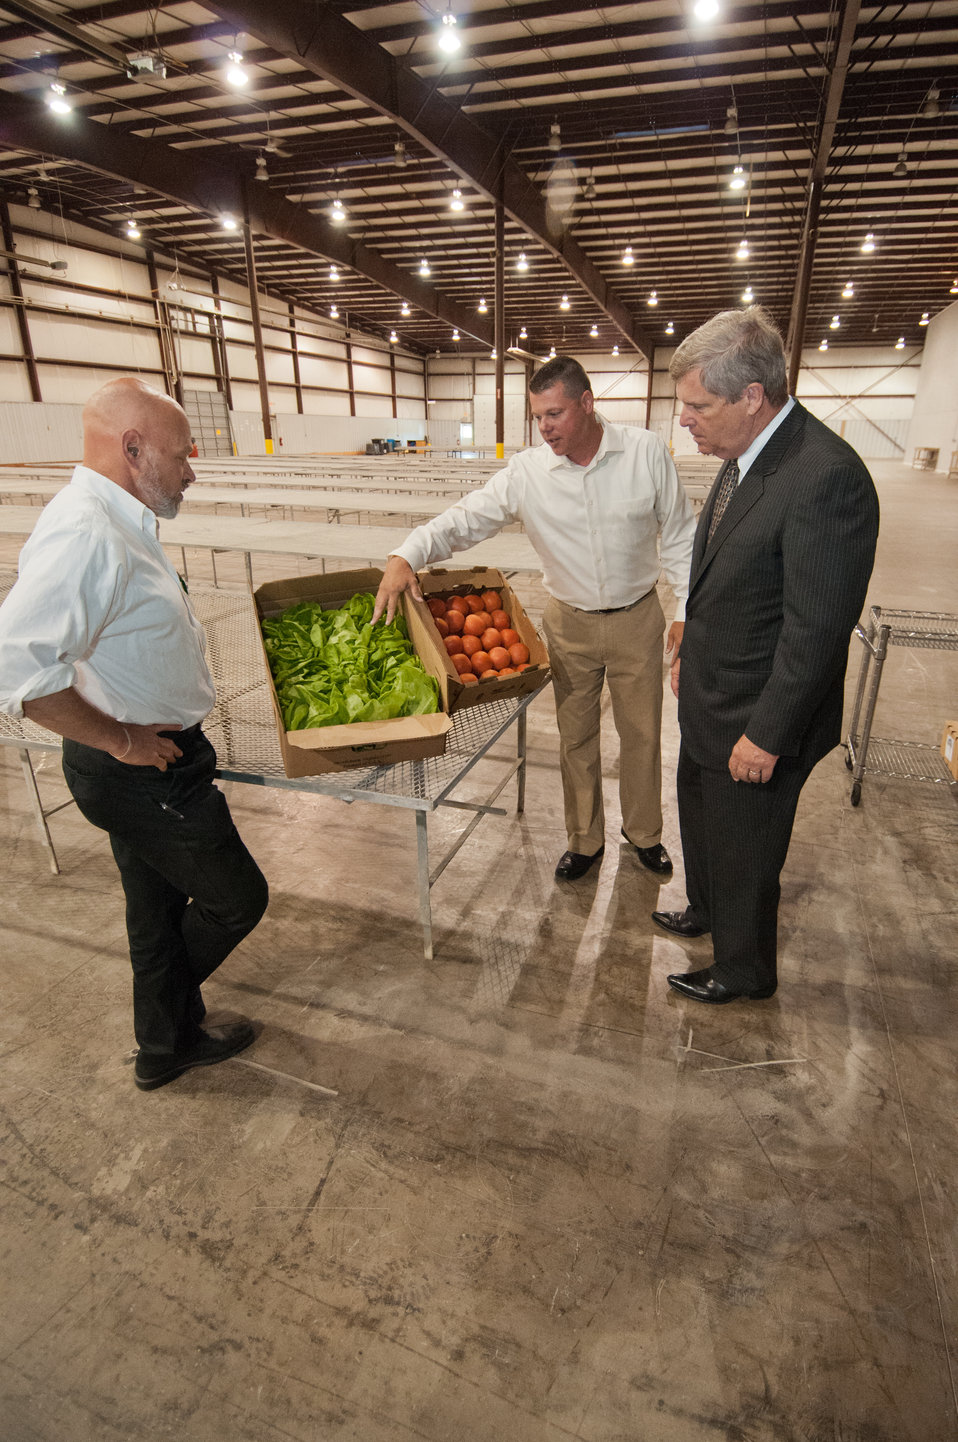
Agriculture Secretary Tom Vilsack visits Blue Ridge Produce in Elkwood, VA on Thursday, May 30, 2013. Blue Ridge Produce is a local food hub aggregating Virginia-grown fruits and vegetables for sale to wholesale customers in the Capitol region. Blue Ridge customers include supermarkets, food service companies serving institutions and regional distributors and the company recently received a contract with a restaurant franchise to supply all of their restaurants in the mid-Atlantic region with lettuce, onions, peppers and jalapeño peppers. (L to R Blue Ridge Produce Jim Epstein, Blue Ridge Produce Mark Seale, and Agriculture Secretary Tom Vilsack).